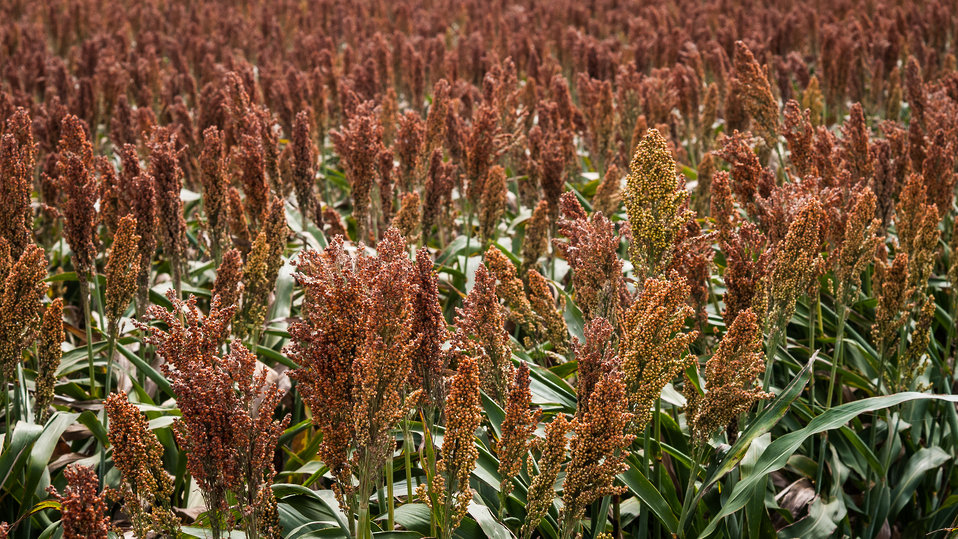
Milo (grain sorghum) grows at Popp Farms 05 (pronounced Pope) in El Campo, TX on Jun. 20, 2013. A 2,400-acre operation also grows cotton and are part of the United Agricultural Cooperative, Incorporated.